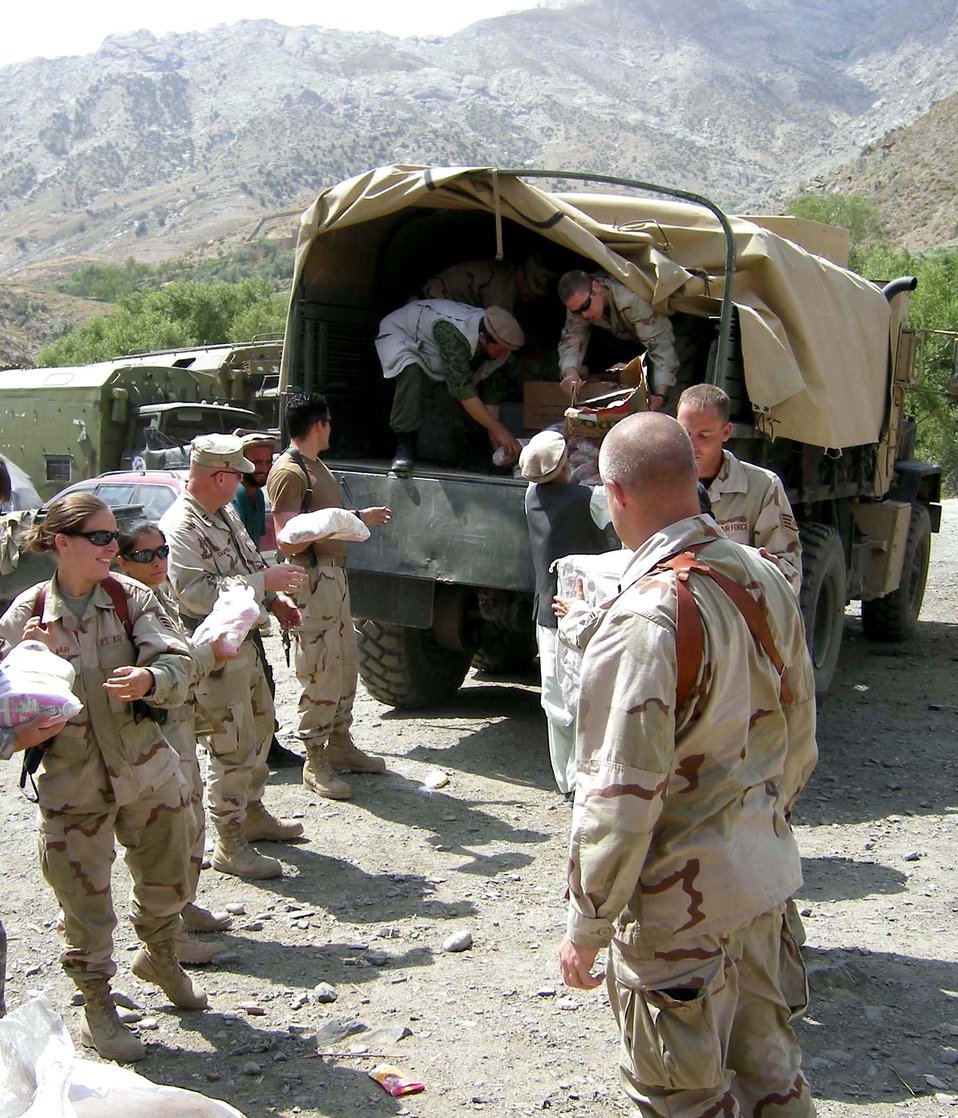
Humanitarian assistance

Members of the Panjshir Provincial Reconstruction Team and volunteers unload a 5-ton truckload of humanitarian assistance food supplies near Abdara, Afghanistan, on July 30. More than 180 Afghan locals are building a road by hand to connect three villages to the main road across the Panjshir River. Governor Haji Bahlol requested assistance for workers who are unable to provide for their families while building the road. The PRT also plans to provide tool kits with shovels, picks, hammers and other hand tools to assist with the project.